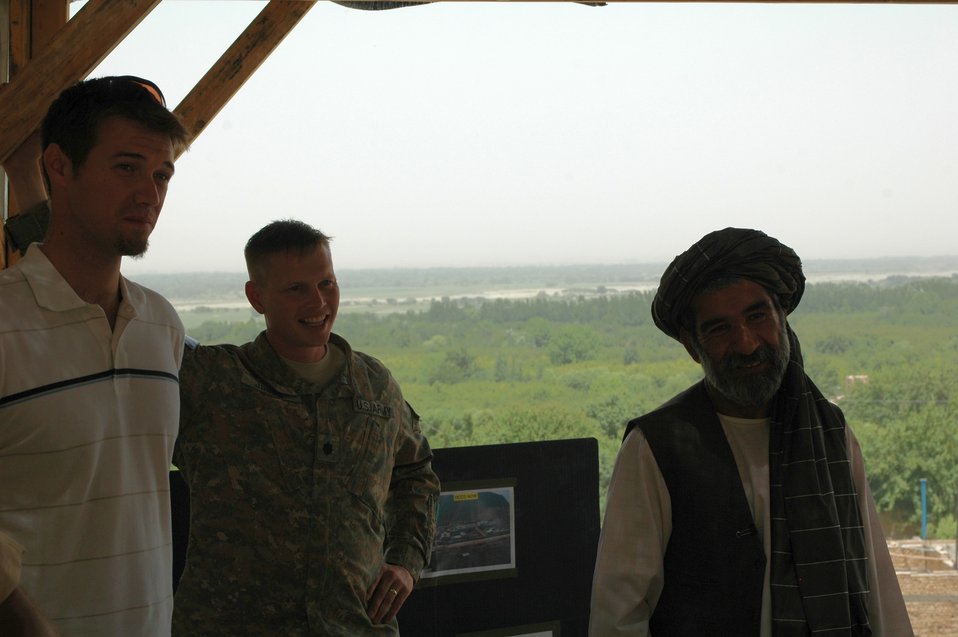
CODEL Berman